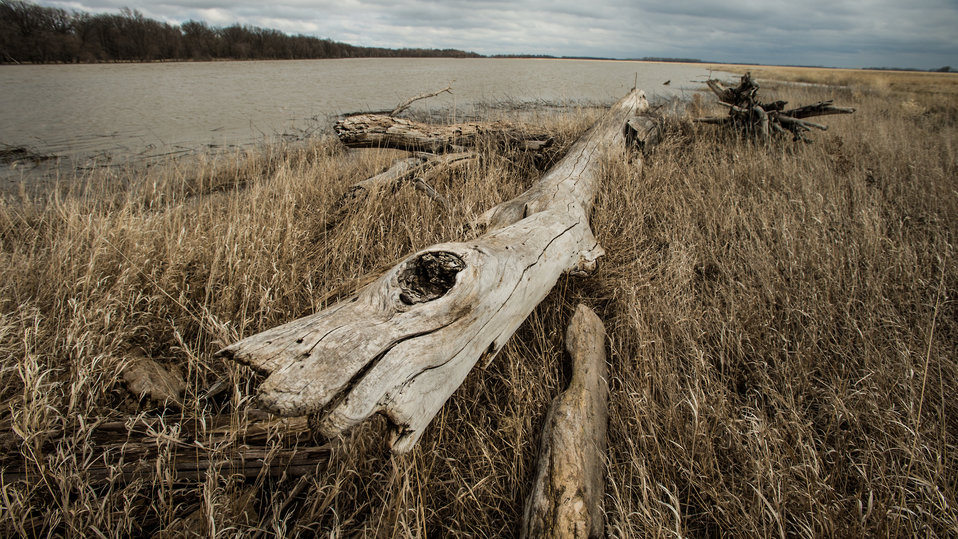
Woody debris on Neil Hanson Emergency Watershed Protection (EWP) Flood Plain Easement located along Red River east of Bowesmont, and part of the Red River basin in ND, Wednesday May 1, 2013. To learn about the Red River Basin Initiative, see www.mn.nrcs.usda.gov/news/features13/RRBI.html.